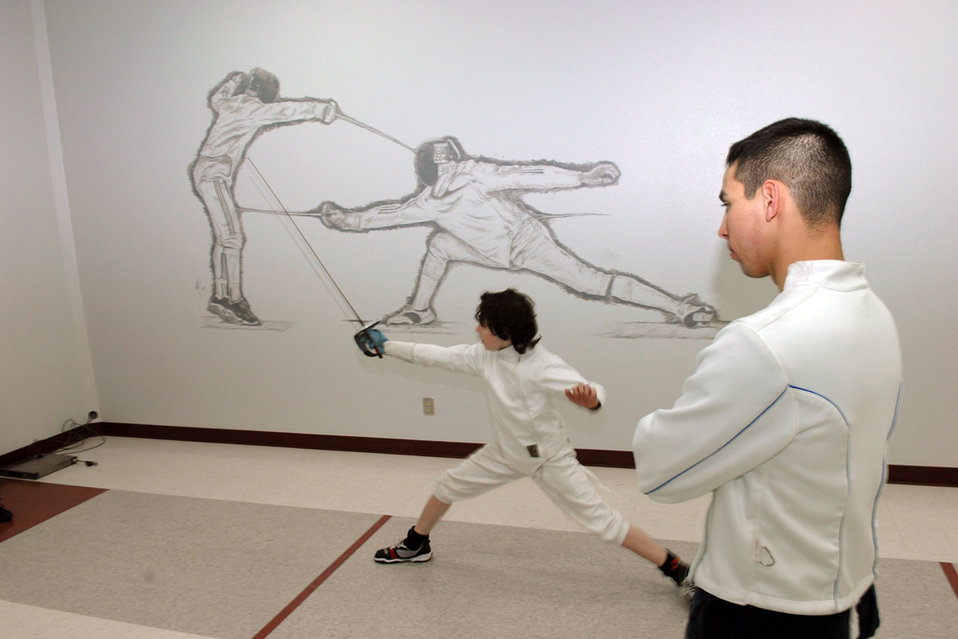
Arctic Warrior qualifies for national fencing tournament

Airman 1st Class Devin Zayas instructs Connor Van Alstrine in proper fencing form Feb. 3, 2011, at the Fencing Center of Alaska in Anchorage, Alaska. Airman Zayas is a network integration technician with the 673rd Communications Squadron.